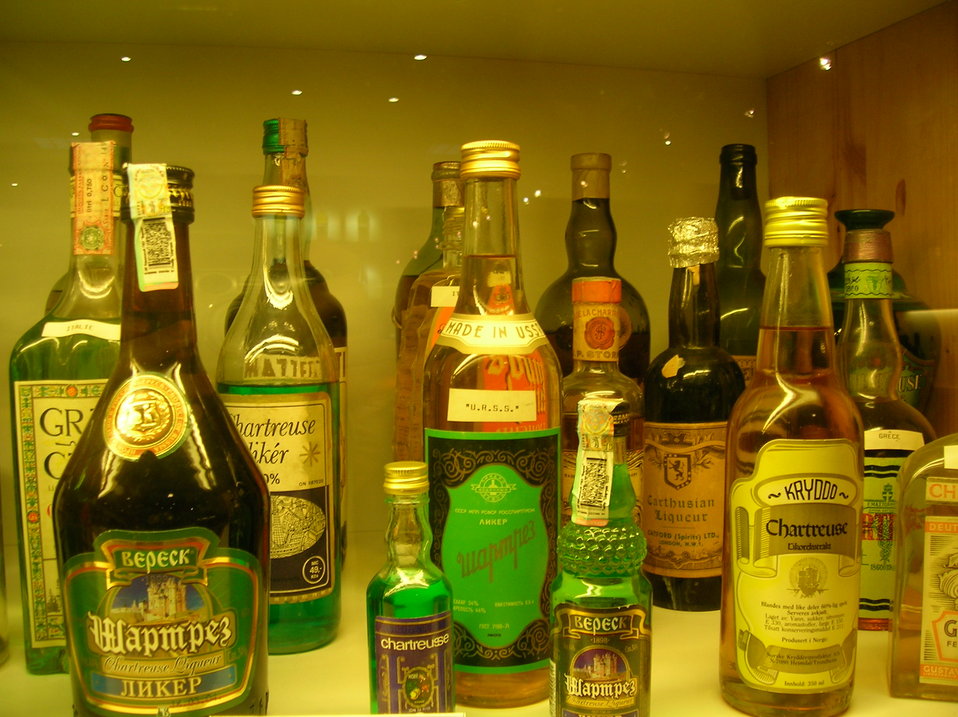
Counterfeits of Chartreuse liquors. Fran√ßais†: Contrefa√ßons de liqueur de Chartreuse.